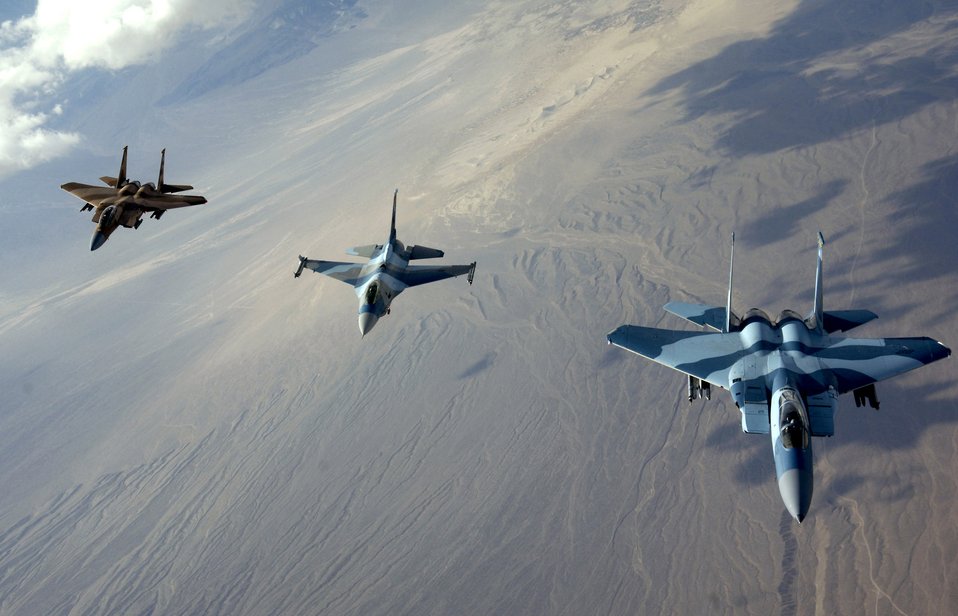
Soaring high

F-15 Eagles and an F-16 Fighting Falcon take flight after a refueling at Nellis Air Force Base, Nev., Aug. 28.